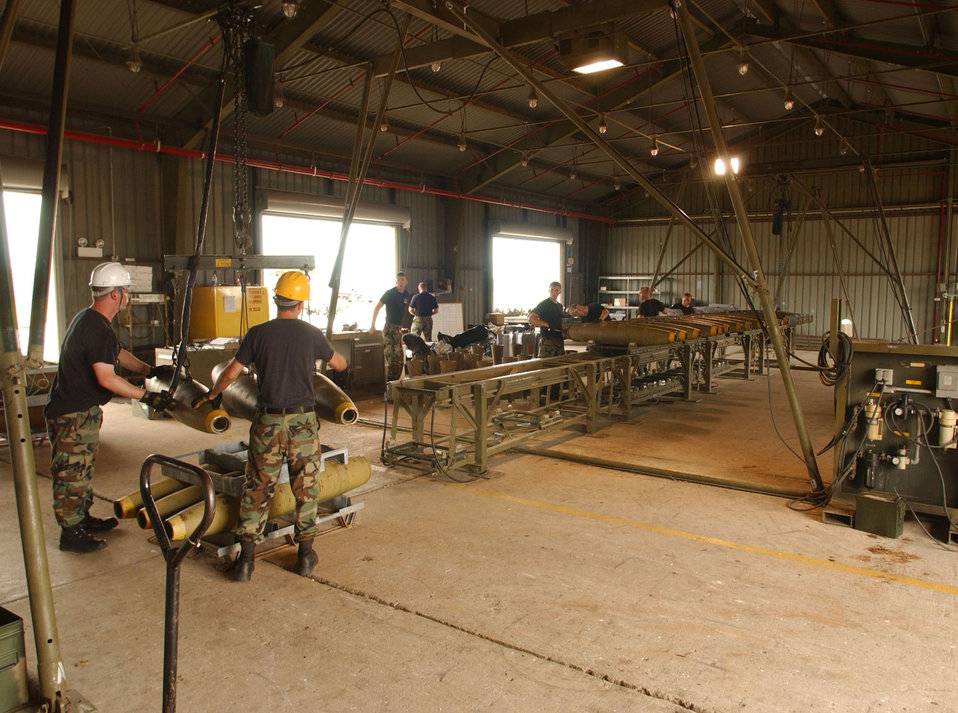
CAPEX underway at Kunsan

Airmen participating in a combat ammunition production exercise being held at Kunsan Air Base, South Korea, assemble, pack and load bombs for shipment July 11. The three-day exercise provides Pacific Air Forces and Air Combat Command units with training in mass munitions assembly in support of aircraft sortie generation.